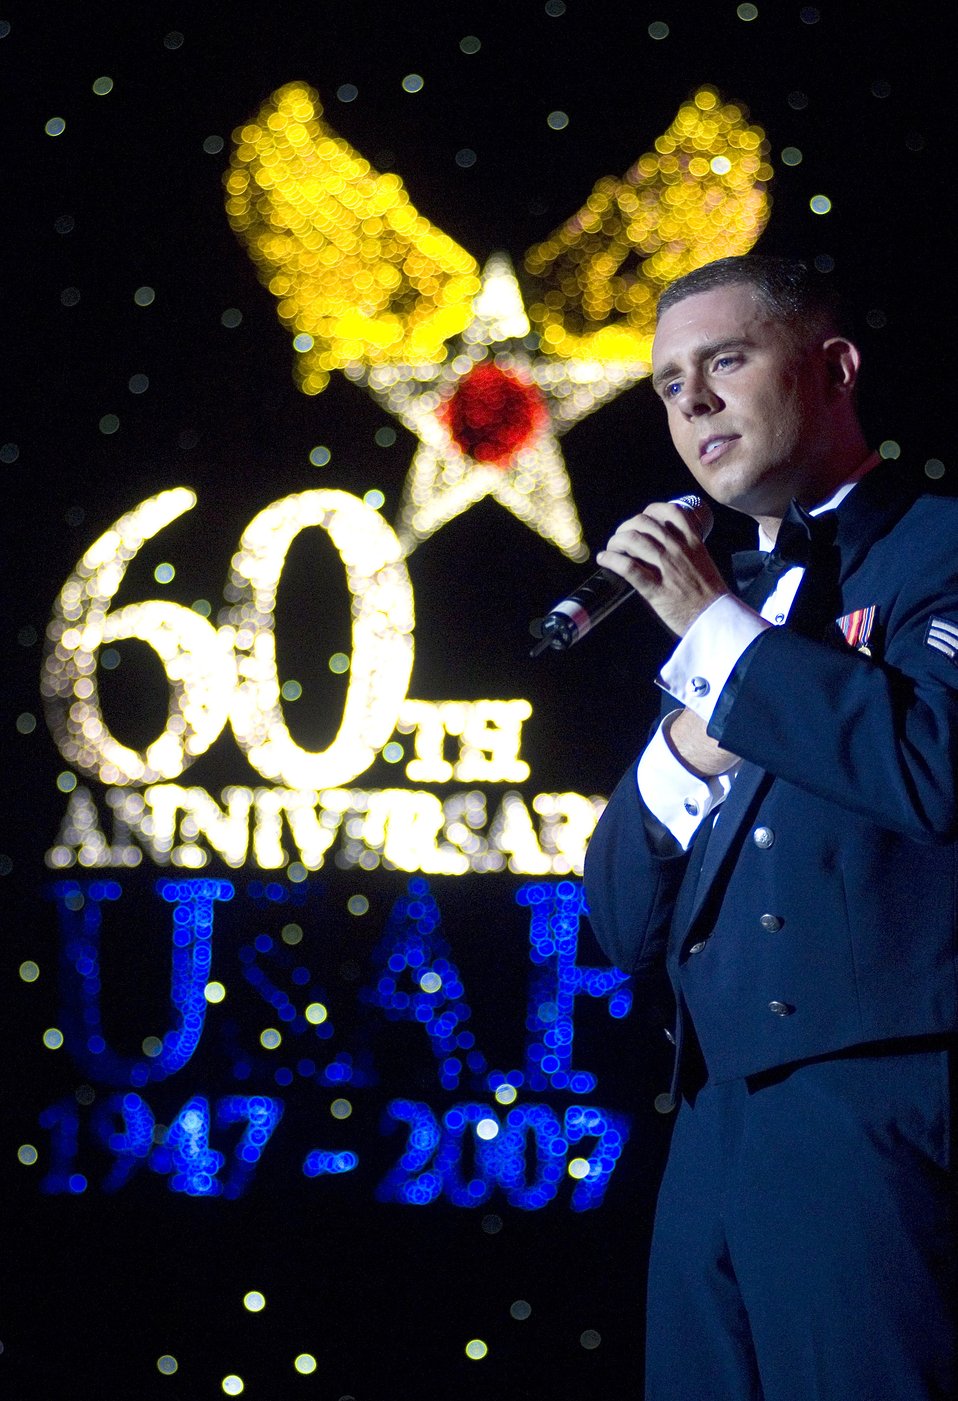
Air Force Week Atlanta

Senior Airman Nicholas Amari performs a song honoring the families of Airmen serving in deployed locations during a Tops in Blue musical tribute Oct. 9 in Mableton, Ga. Tops In Blue was in Georgia as part of Air Force Week Atlanta.